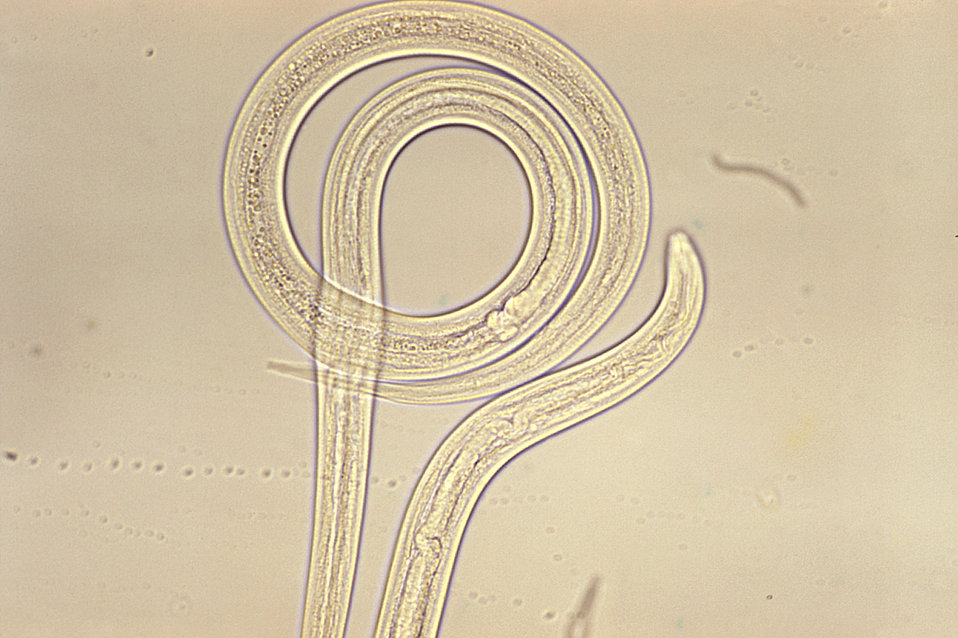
Magnified 400X, this photomicrograph depicted a number of Strongyloides sp. filariform larvae.Laboratory Diagnosis: